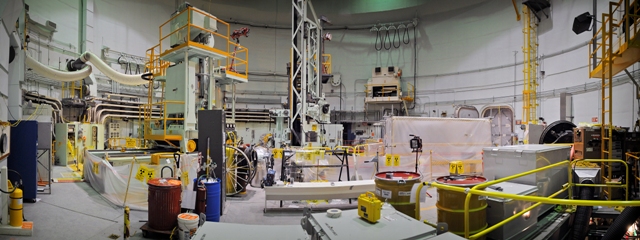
Idaho Site Advances Recovery Act Cleanup after Inventing Effective Treatment

A panorama shows the floor of the Experimental
Breeder Reactor-II at the Idaho site.
***
For the first time in history, workers at the Idaho site
achieved success in the initial cleanup of potentially dangerous sodium in a decommissioned nuclear reactor using an innovative treatment process.

With the help of technology development funds provided by Environmental Management’s Office of Deactivation & Demolition and Facility Engineering, the project developed a citric acid solution that reacts calmly with the sodium, preventing harm to workers. The American
Recovery and Reinvestment Act invested $70 million in the project.